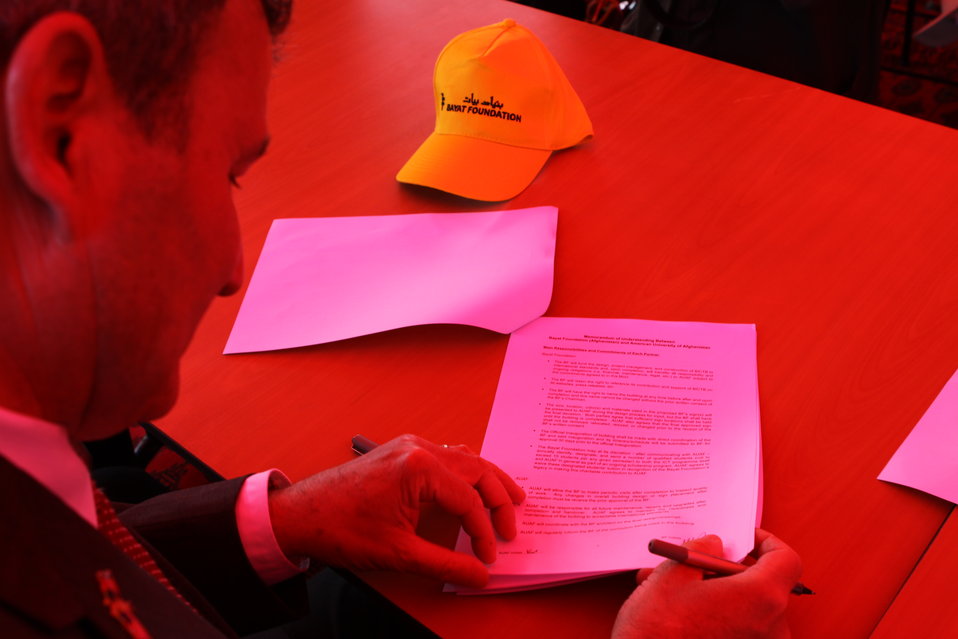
100526 AUAF Graduation 369